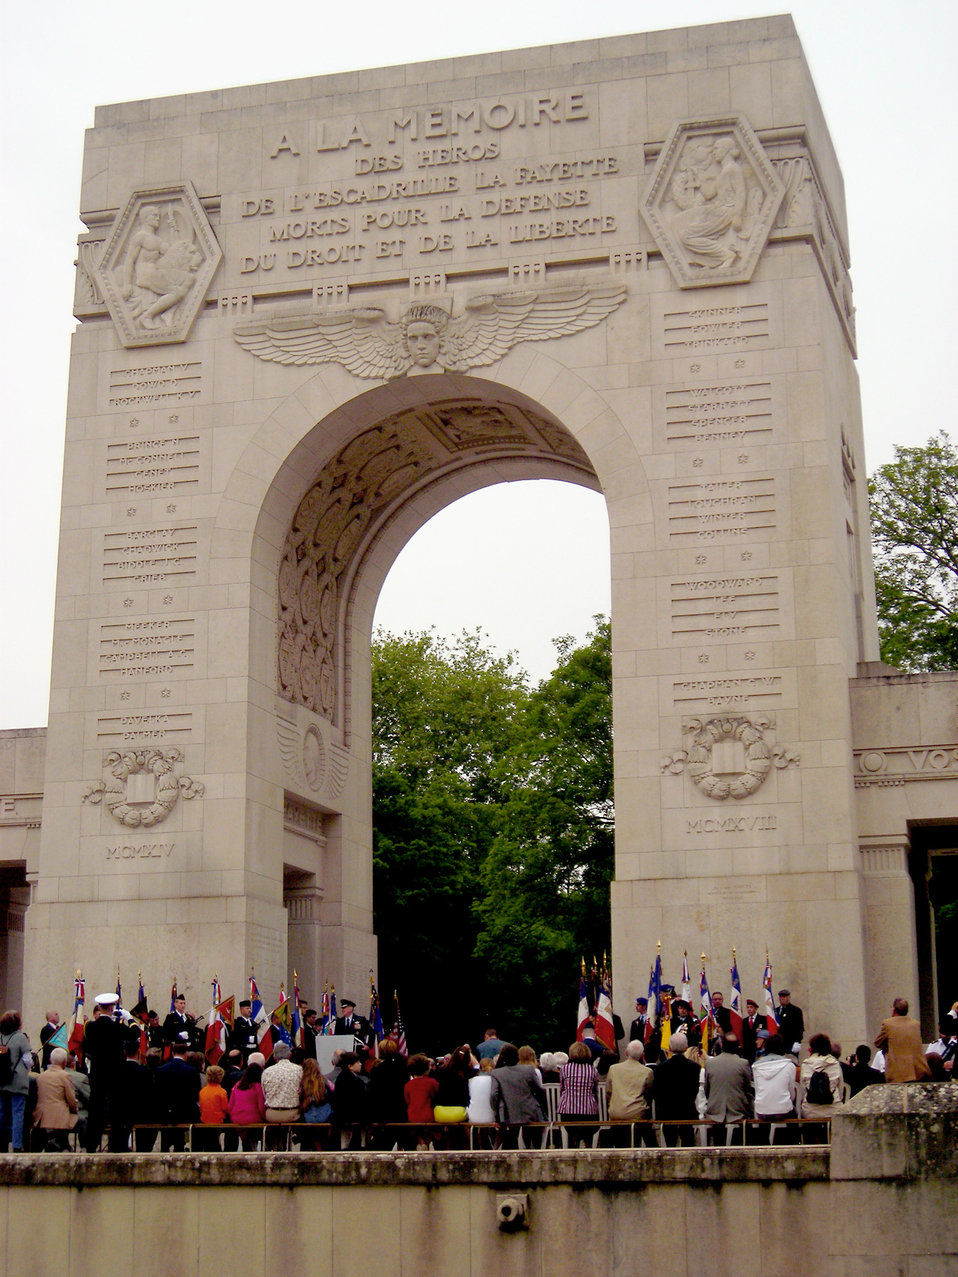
U.S., French remember America's first combat pilots

Gen. Roger Brady gives his remarks during a dignified ceremony at the Lafayette Escadrille Memorial outside of Paris, May 27, 2010. U.S. and French civilian and military leaders paid their respects to America's first combat pilots during the event. The Lafayette Escadrille Memorial is a reminder for all of the American pilots of the Escadrille La Fayette and the Lafayette Flying Corps who died during service to the Allies during World War I. General Brady is the U.S. Air Forces in Europe commander.